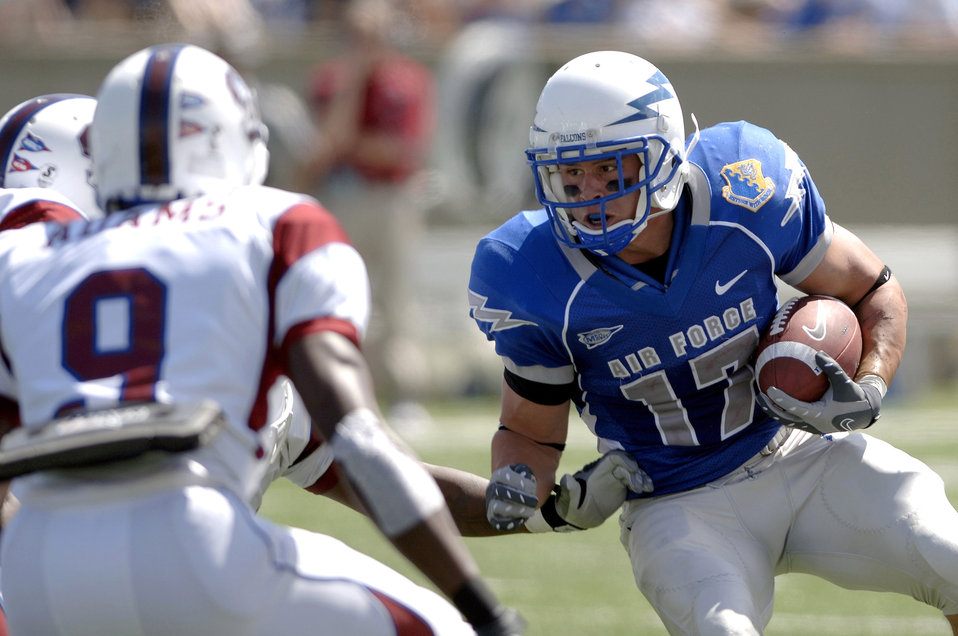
Get ready here I come

Air Force tailback Kip McCarthy faces South Carolina State corner back Phillip Adams and others Sept. 1 at Falcon Stadium. The Air Force senior rushed for a game-high 129 yards on 22 carries against the Bulldogs. Air Force defeated SC State, 34-3.